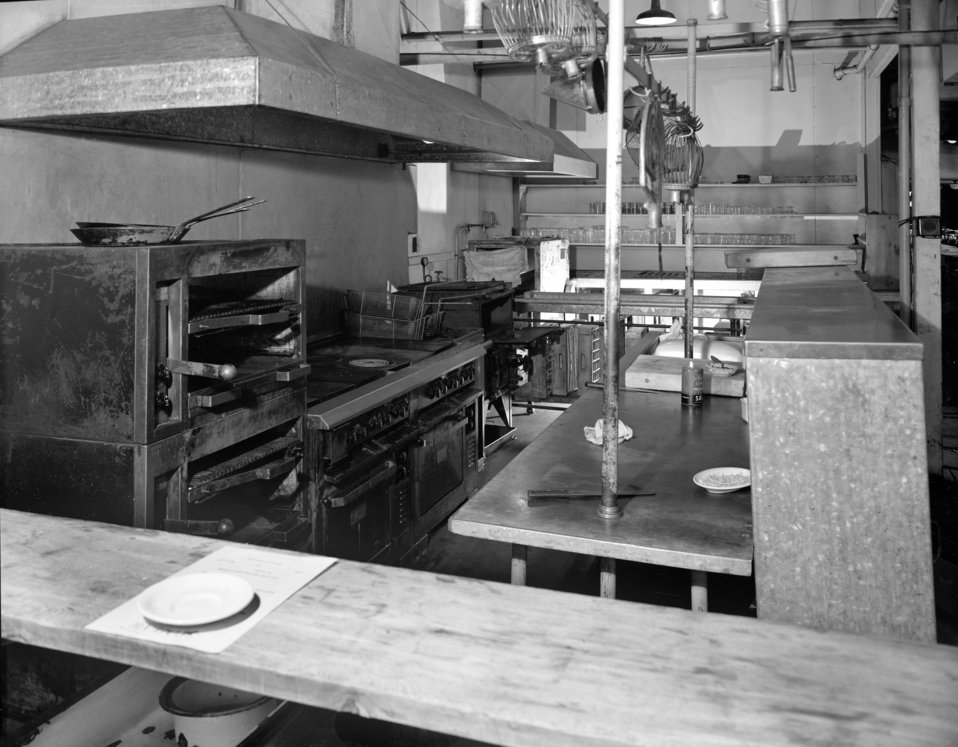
Grove Hall Interior Oak Ridge 1948

DOE photo Ed Westcott 5-24-1948 Oak Ridge Tennessee